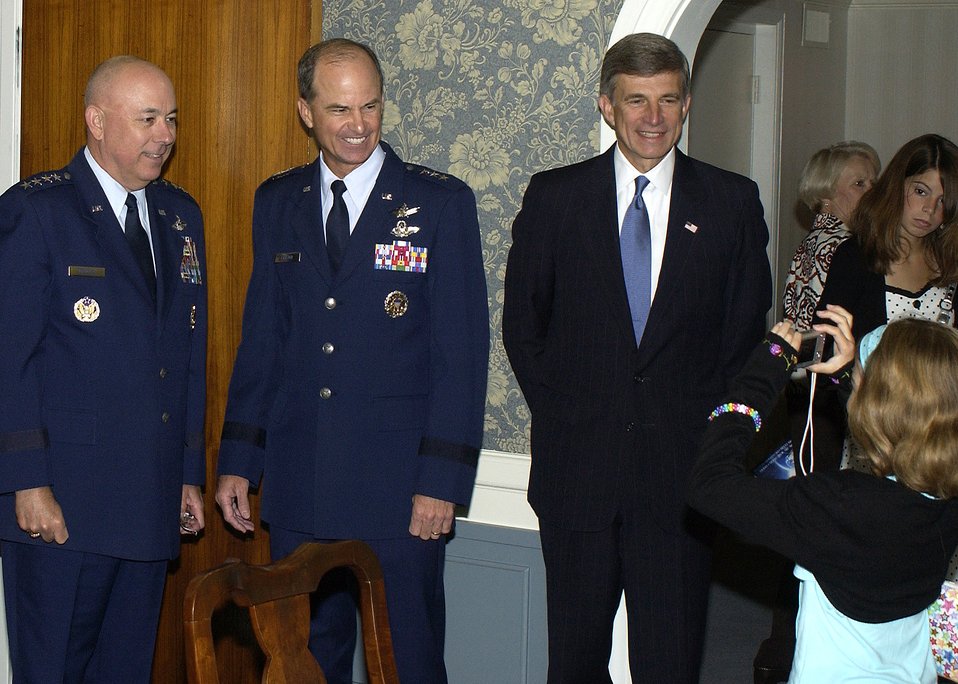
Former astronaut takes command of Air Force Space Command

Gen. Kevin P. Chilton's youngest daughter, Morgan, snaps a quick photograph of her father with Air Force Chief of Staff Gen. T. Michael Moseley and Dr. Ronald Sega, undersecretary of the Air Force, just before the general assumes command of Air Force Space Command at Peterson Air Force Base, Colo., on Monday, June 26.